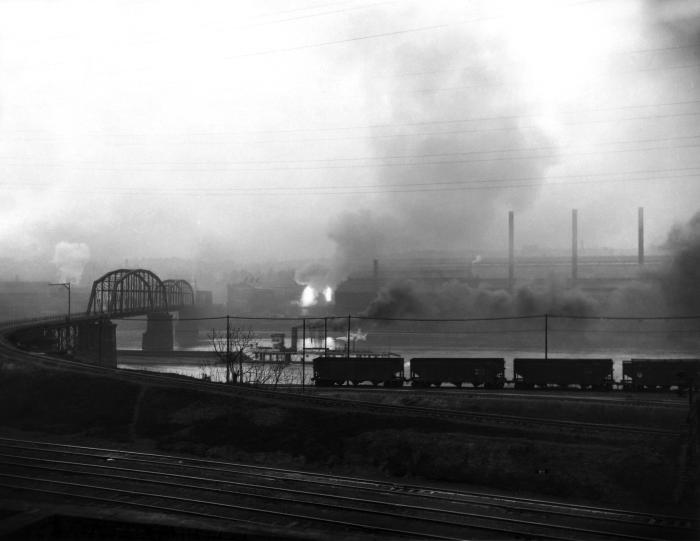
This historical 1946 image was captured during a U.S. Public Health Service (USPHS) field study, and depicted the air polluted landscape of an American city. Evidence such as this photograph helped to forge the rules and regulations to which industry must abide in order to stem the environmental damage created by industrial pollution. Now, industrial plant exhaust stacks are outfitted with filtration devices, which dramatically curtail the indiscriminant expulsion of air pollutants into the atmosphere.